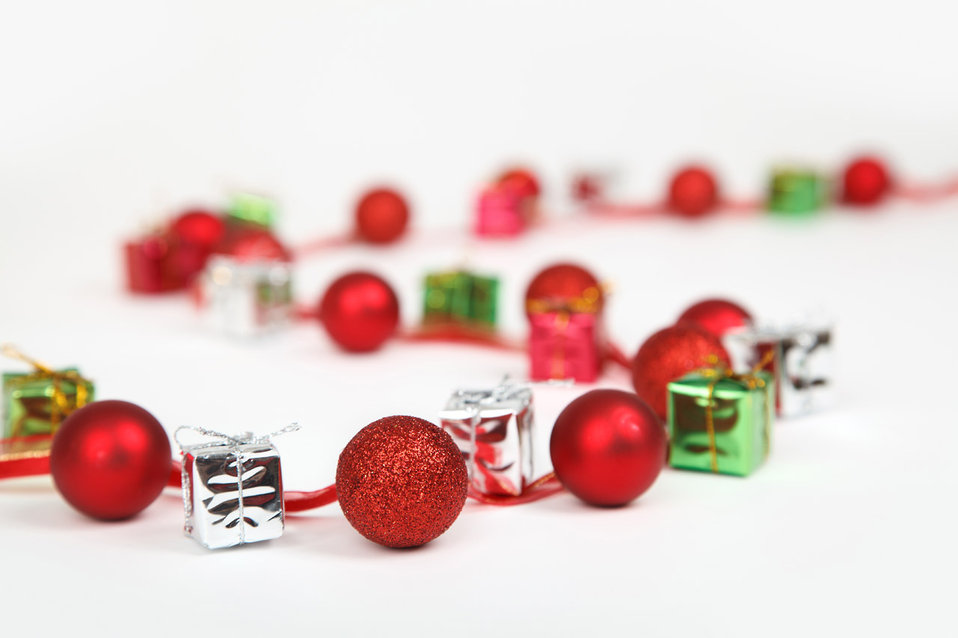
Baubles and presents

A curve created with baubles and presents on white background.